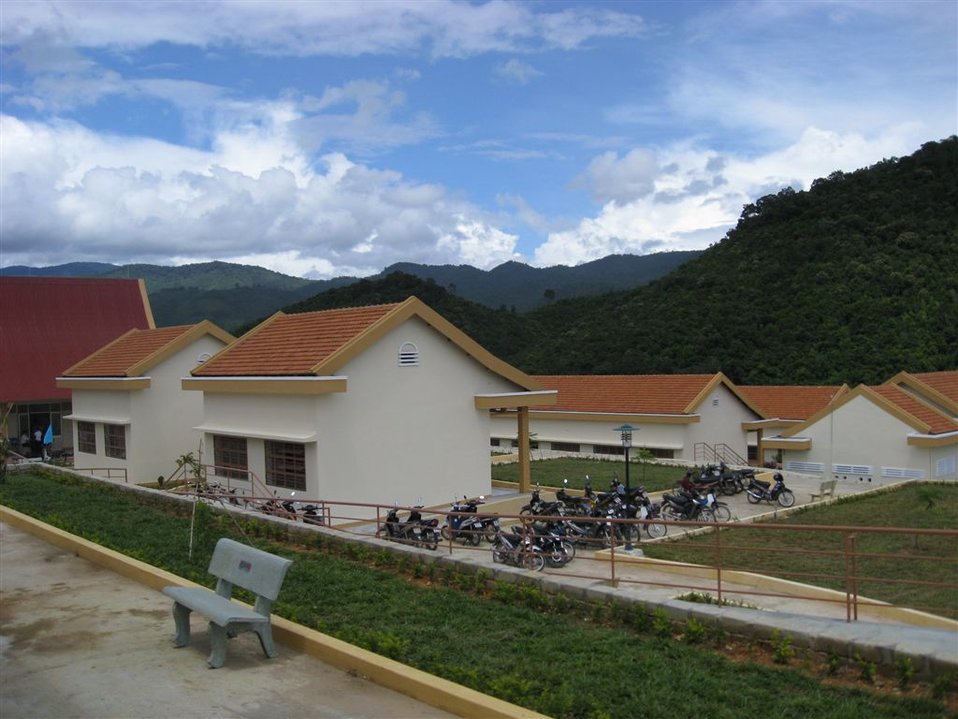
Kon Ray School